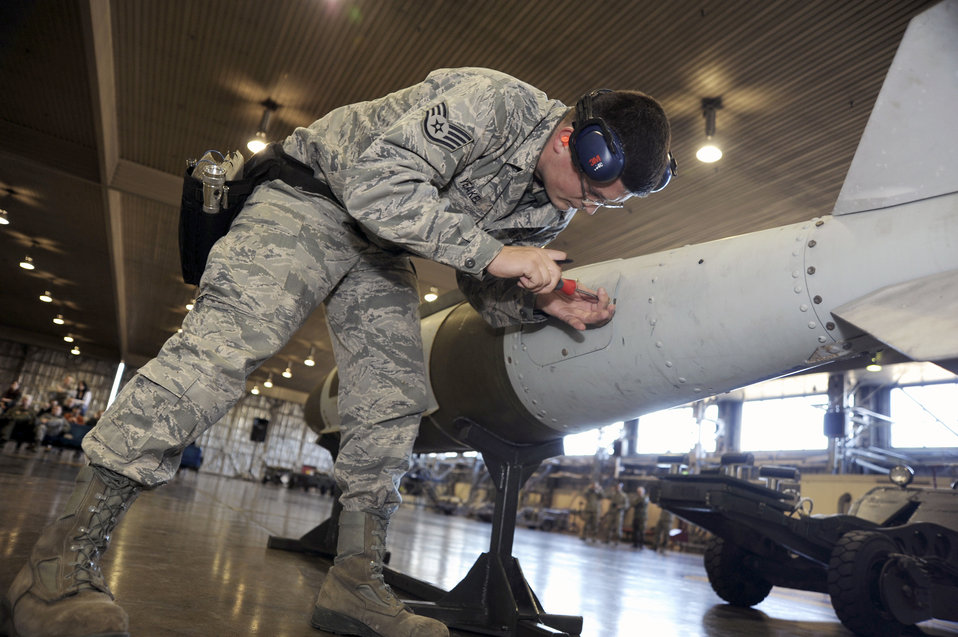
Load crew competition

Staff Sgt. Nikolai Yeakel opens the fuse access door to verify a setting on the munitions during the wing load crew competition Dec. 17, 2010, at Misawa Air Base, Japan. Load crew team 22 won the 35th Fighter Wing competition. Sergeant Yeakel is a weapons load crew chief with the 35th Maintenance Squadron.